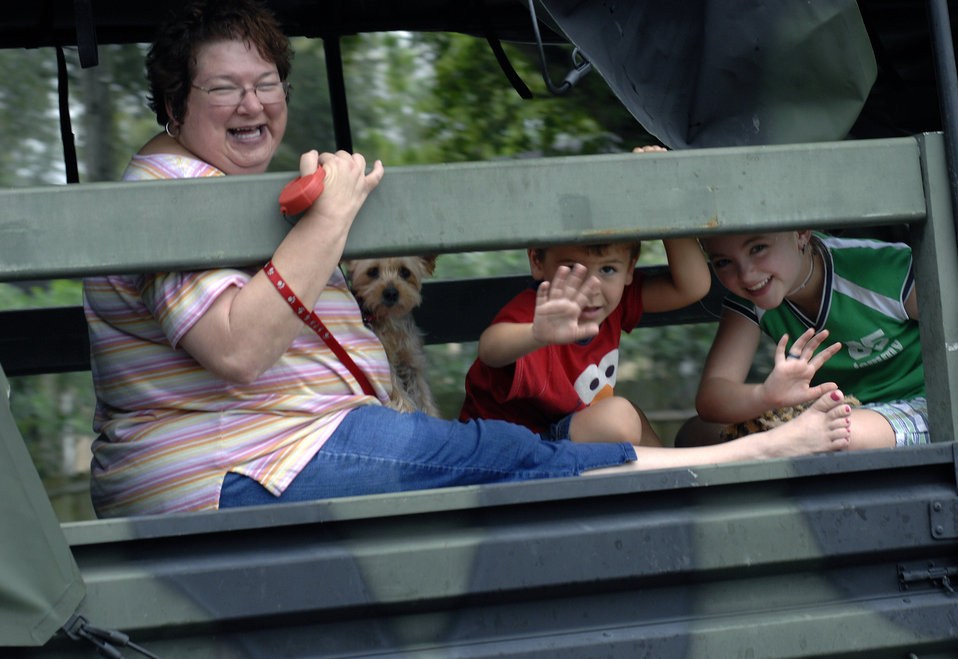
Watchful Eye

Residents of Lake Charles, La., smile with relief after being rescued from flood waters caused by Hurricane Ike by Louisiana Army National Guardsmen Sept. 13.